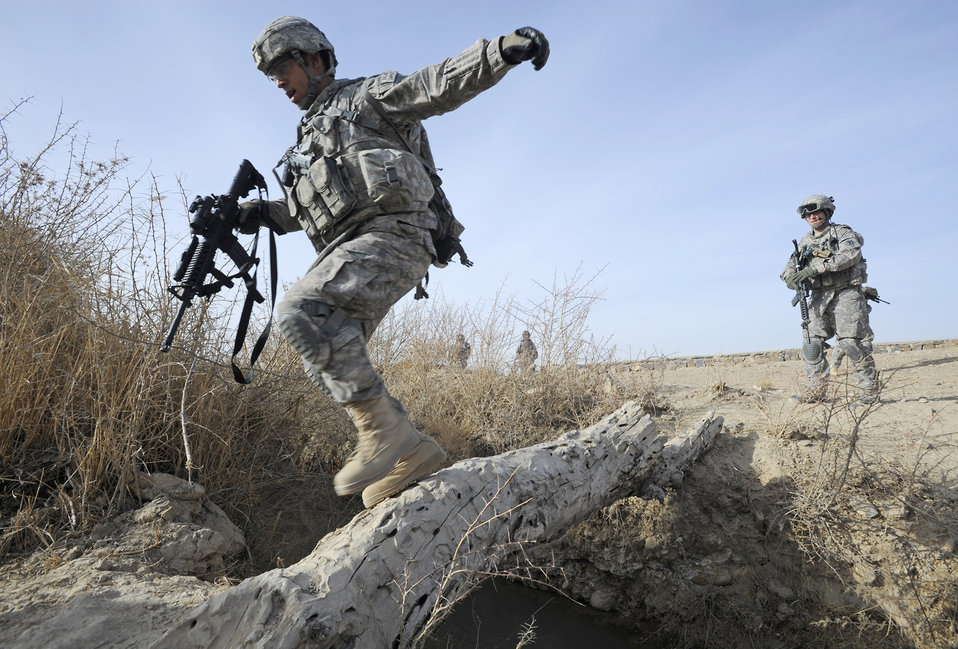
One misstep and I'm in the canal

Staff Sgt. Kevin Flenoury crosses over a canal during a foot mission to the village of Khwazi, Afghanistan, Dec. 14, 2010. Members of Provincial Reconstruction Team Zabul visited the village to survey a site for a future well project. PRT Zabul is composed of members from the Air Force, Army, Department of State, U.S. Agency for International Development, and Department of Agriculture.